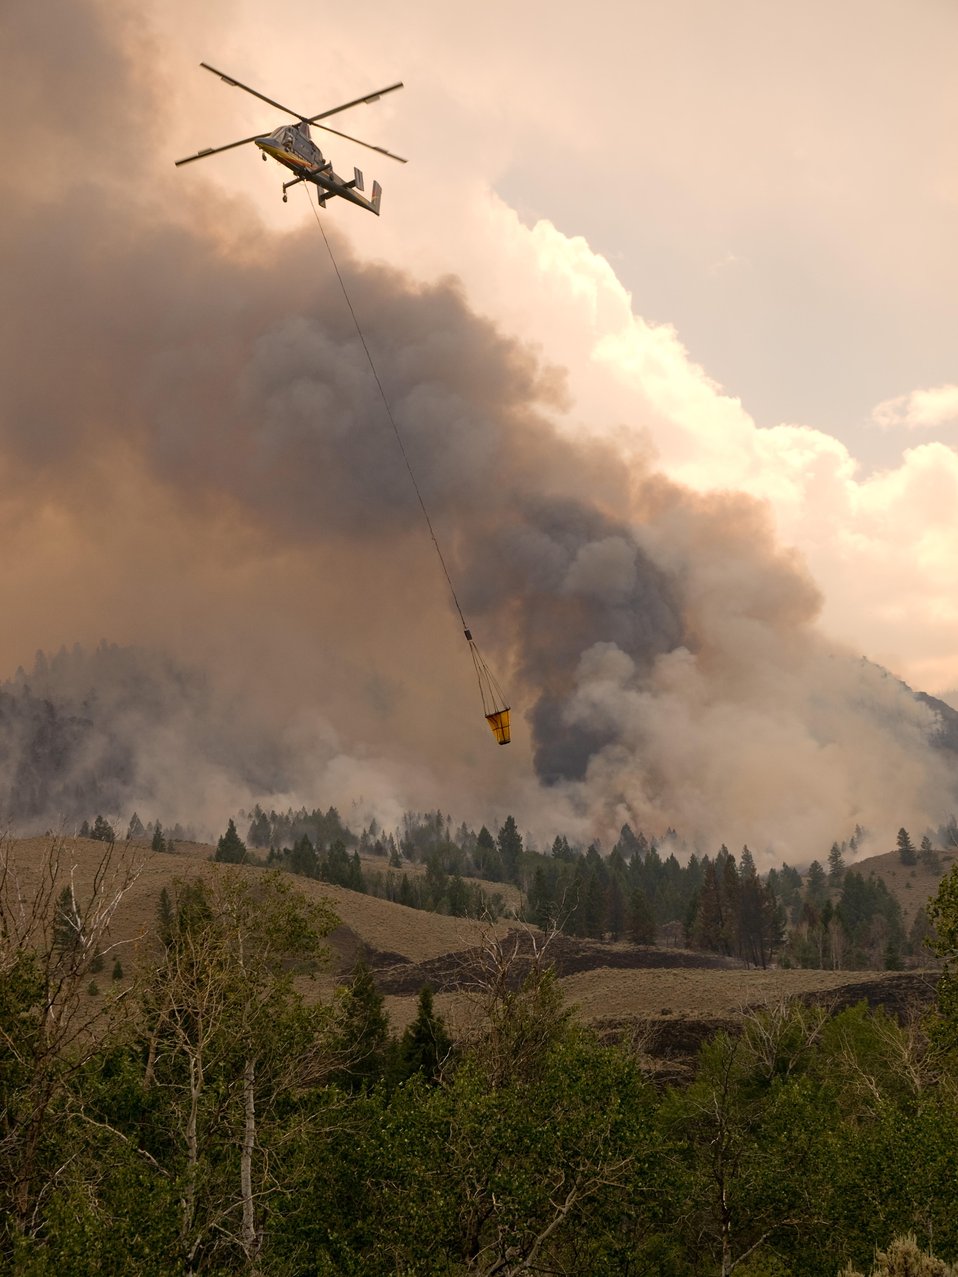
K-Max helicopter works on the Lodgepole Fire. The Lodgepole Fire in the Salmon-Challis National Forest near Challis, ID began on Jul. 20, 2013 by lightning has consumed approximately 13,700 acres and is approximately 15% contained.